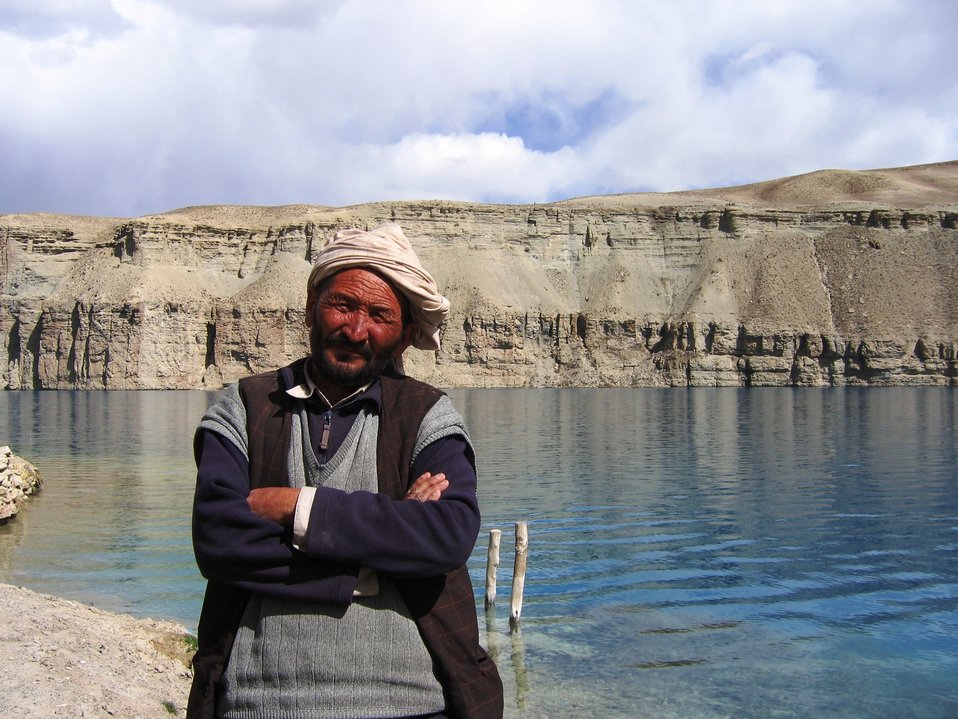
Band-e-Amir protected area committee

A member of the Band-e-Amir Protected Area Committee discusses the challenges of creating Afghanistan's first National Park. A member of the Band-e-Amir Protected Area Committee discusses the challenges of creating Afghanistan’s first national park. The Band-e-Amir region, high in the Hindu Kush mountains of central Afghanistan, possesses striking natural beauty, with six sapphire-blue lakes and numerous streams and waterfalls. Project: Biodiversity Conservation and Natural Resources Management. Implementing Partner: Wildlife Conservation Society